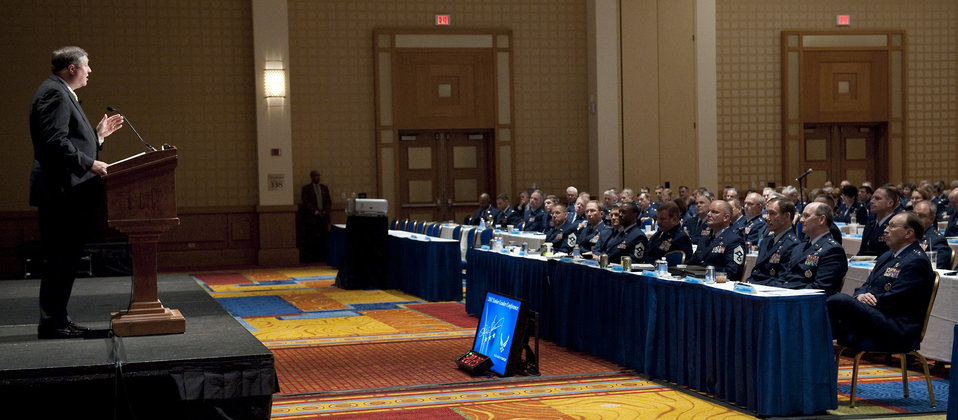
Air Force Reserve Command Senior Leader Conference

Secretary of the Air Force Michael Donley addresses Air Force Reserve Command senior leaders May 16, 2011, during their annual conference in Washington, D.C.